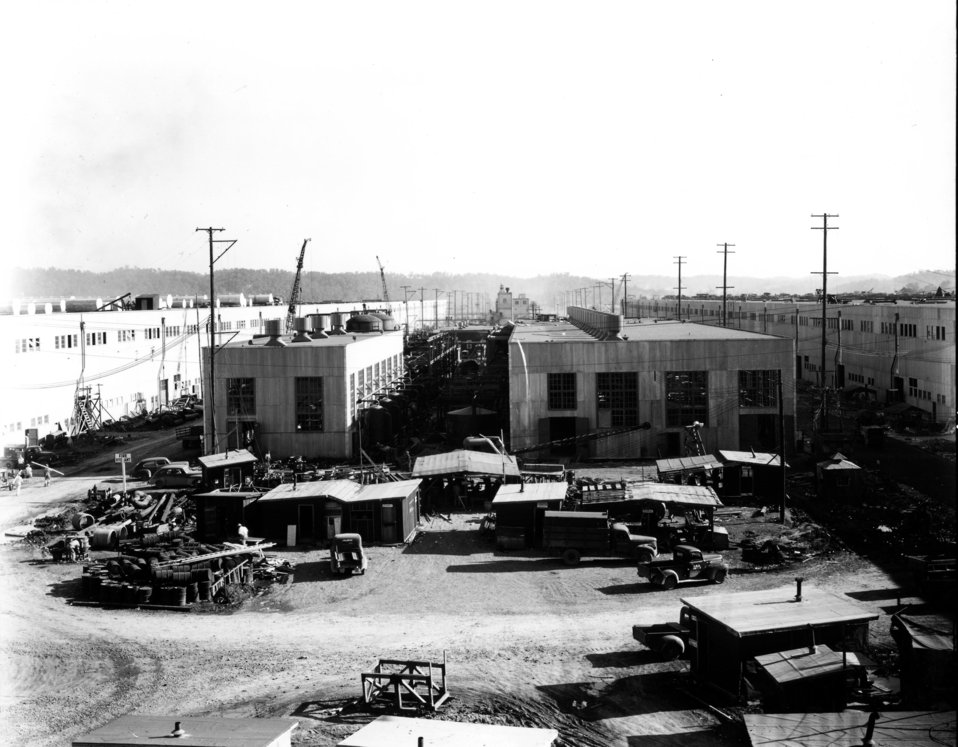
K-25 at Oak Ridge